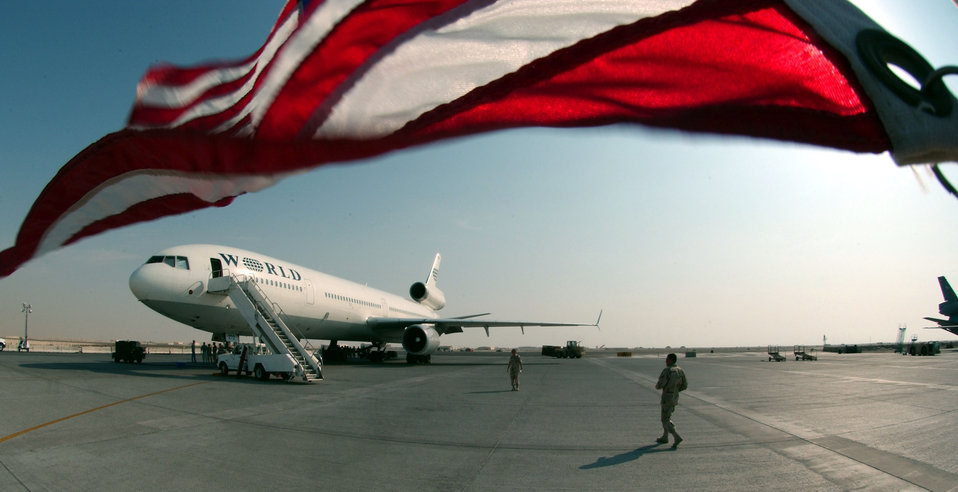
Ol' Glory waving

SOUTHWEST ASIA -- The wind blows the U.S. flag over the top of the DC-10 rotator aircraft that brought the first wave of air and space expeditionary forces to the 380th Air Expeditionary Wing here Sept. 1.